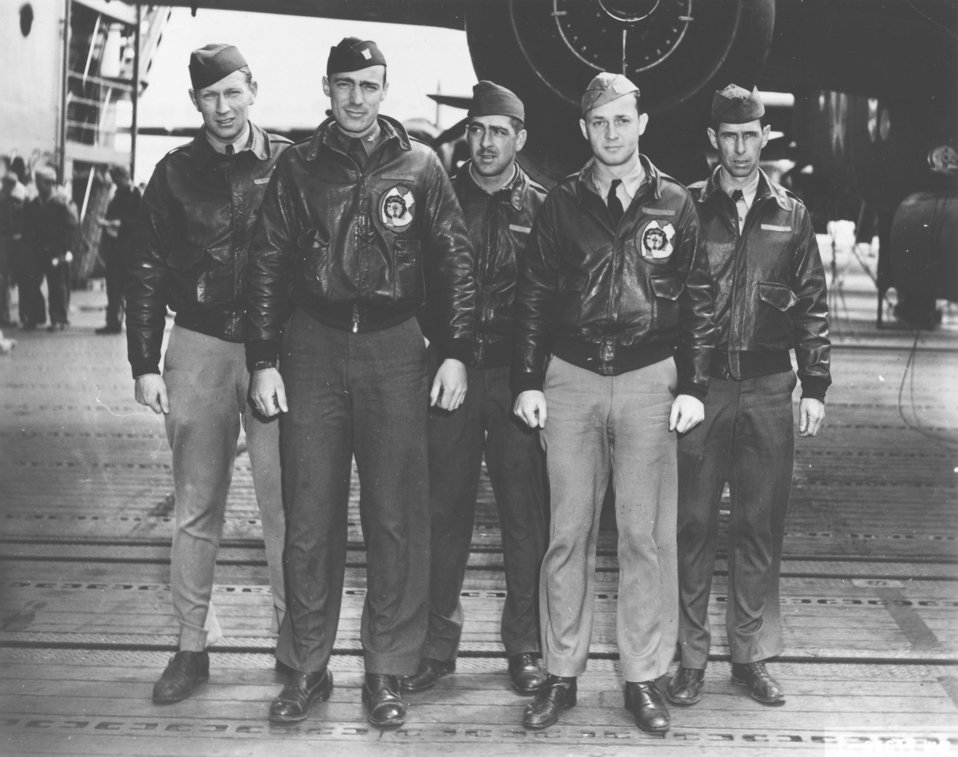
Doolittle Tokyo Raiders, Crew No. 12

Crew No. 12 (Plane #40-2278, target Yokohama): 37th Bombardment Squadron, front row: Lt. William M. Bower, pilot; and Lt. Thadd H. Blanton, copilot; back row: Lt. William R. Pound Jr., navigator; Tech. Sgt. Waldo J. Bither, bombardier; and Staff Sgt. Omer A. Duquette, flight engineer/gunner.